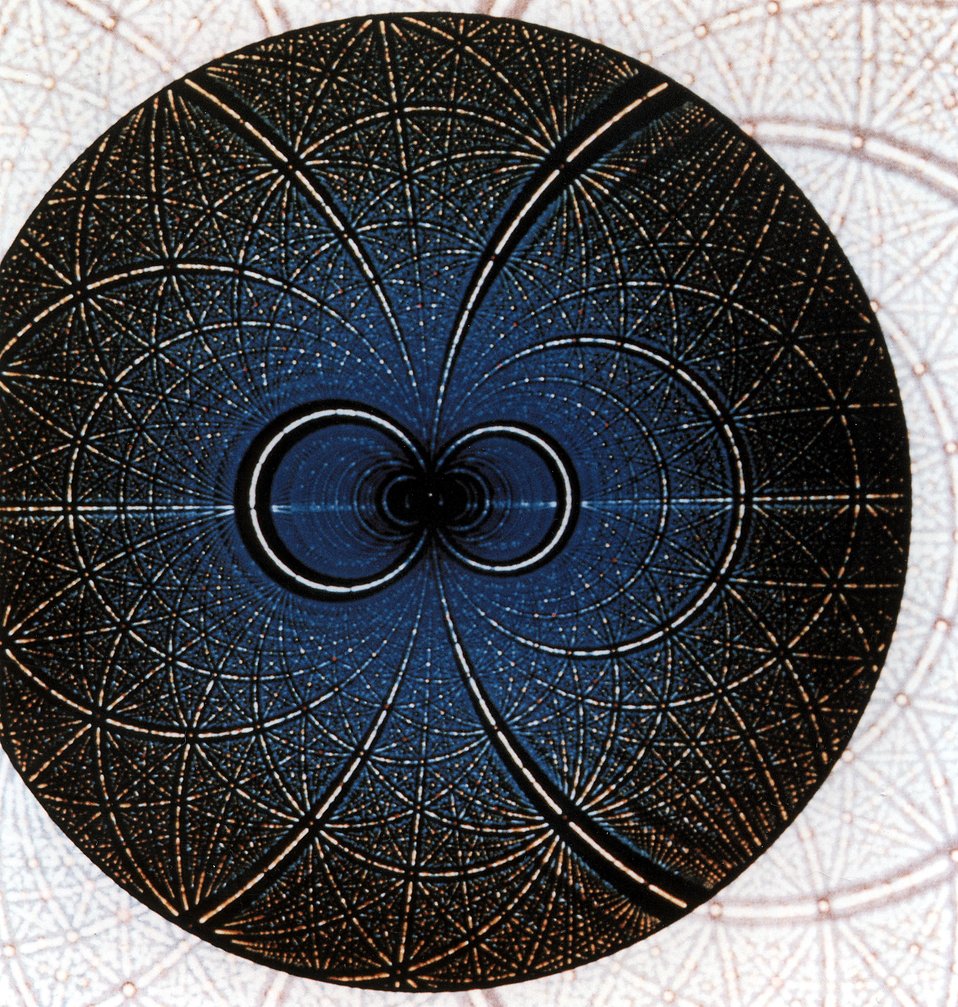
Molecular Snapshots. Laue diffraction experiments use a wide and continuous spectrum of wavelengths from a synchrotron radiation source -- the x-ray analogue of white light. Shown here is a computer simulation of a Laue pattern for the enzyme glycogen phosphorylase.